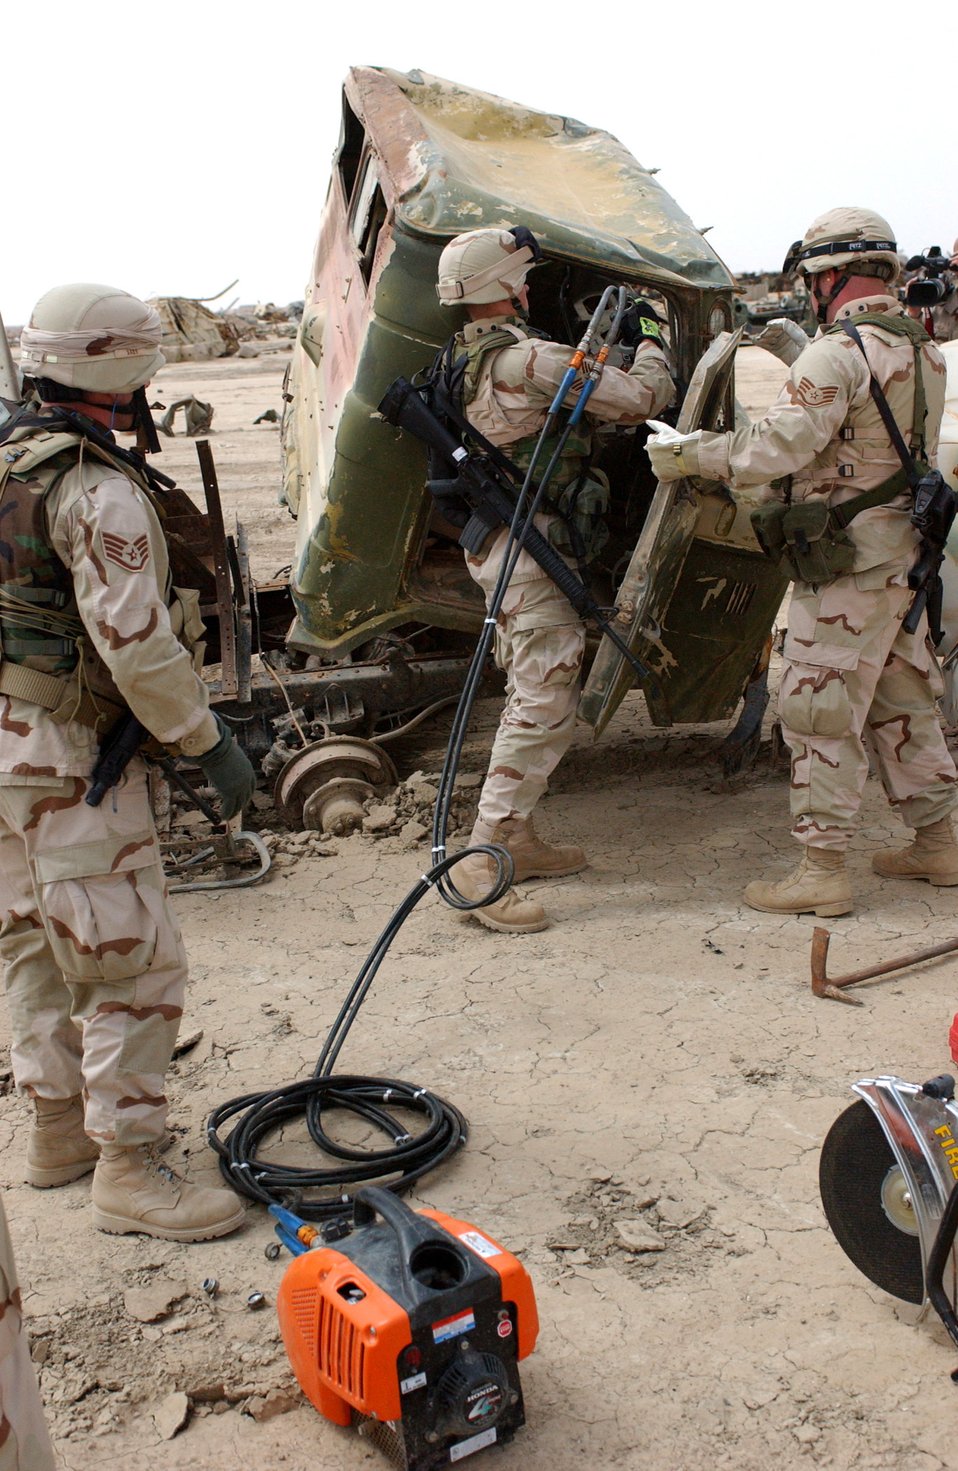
Simulated vehicle accident

Staff Sgt. Matthew Loughlin holds the door as Senior Airman Andy Gerdeman cuts off the hinges on a vehicle used in a simulated vehicle accident on Monday, April 3, 2006, at Ali Base, Iraq. The simulated accident was a joint exercise with a U.S. Army air ambulance unit and the 407th Expeditionary Civil Engineer Squadron.